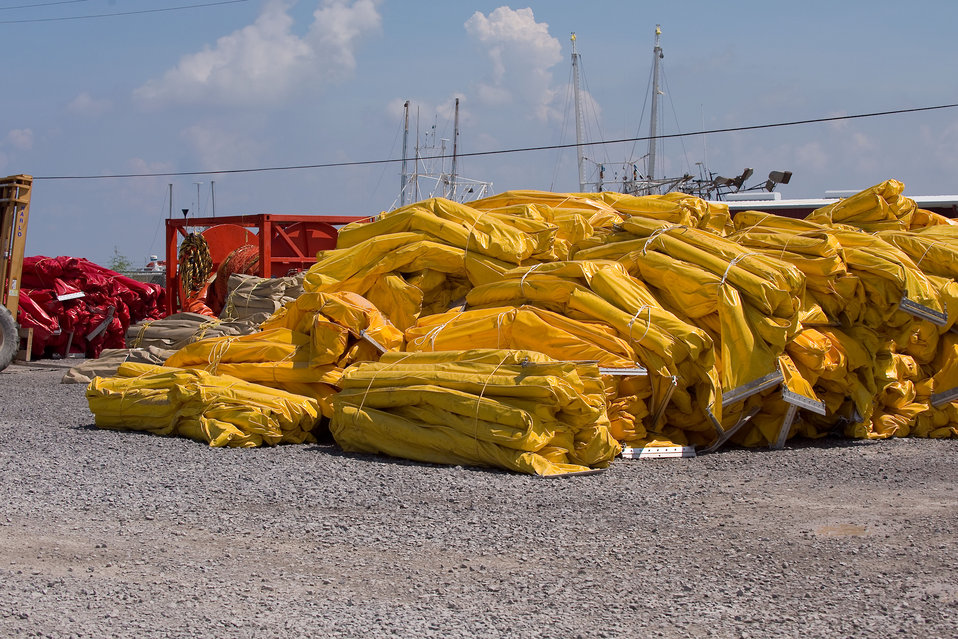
August 7, Cleaned boom ready for redeployment

Stacks of cleaned and inspected boom ready for redeployment.